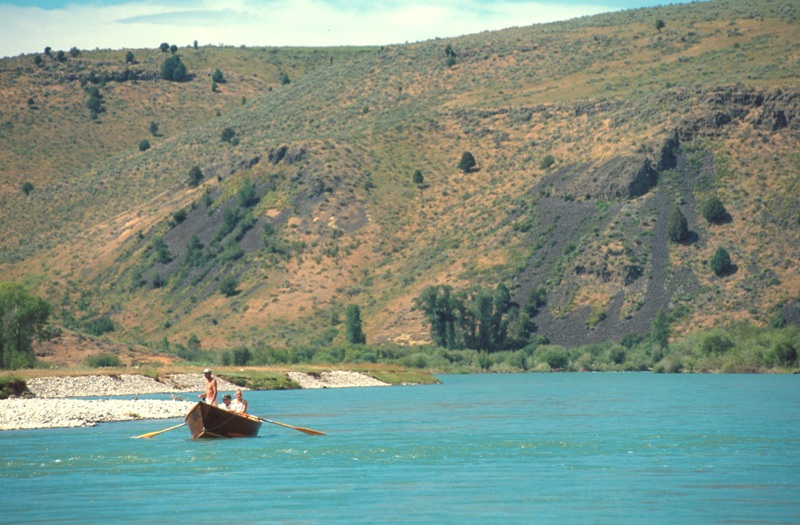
South Fork of the Snake River